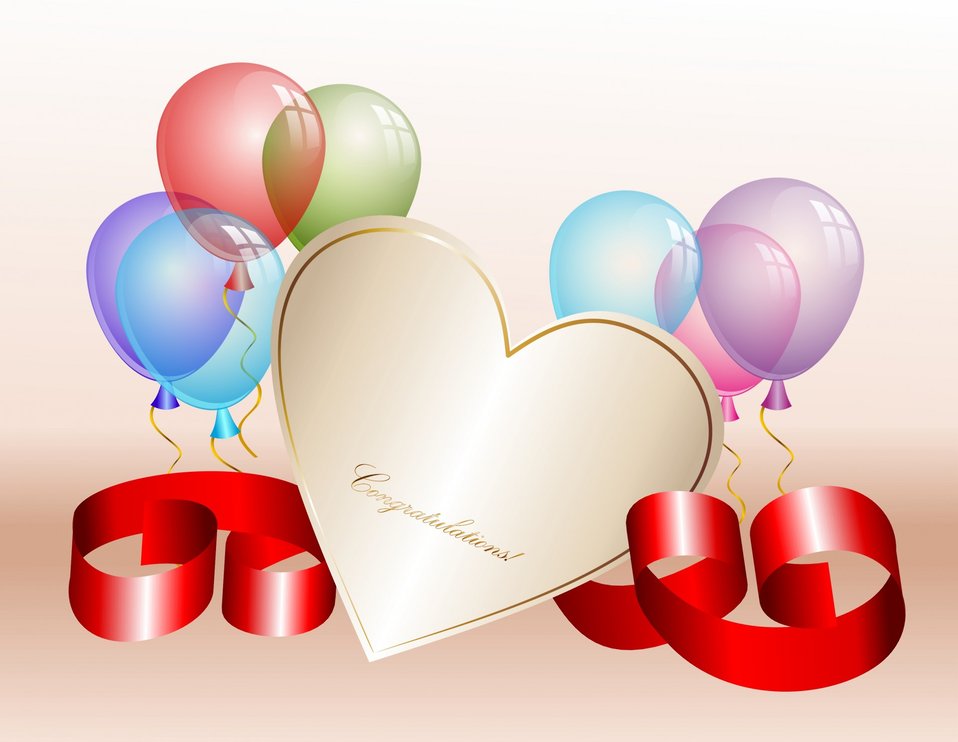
Balloons and heart

Balloons and a big beautiful heart with the inscription.